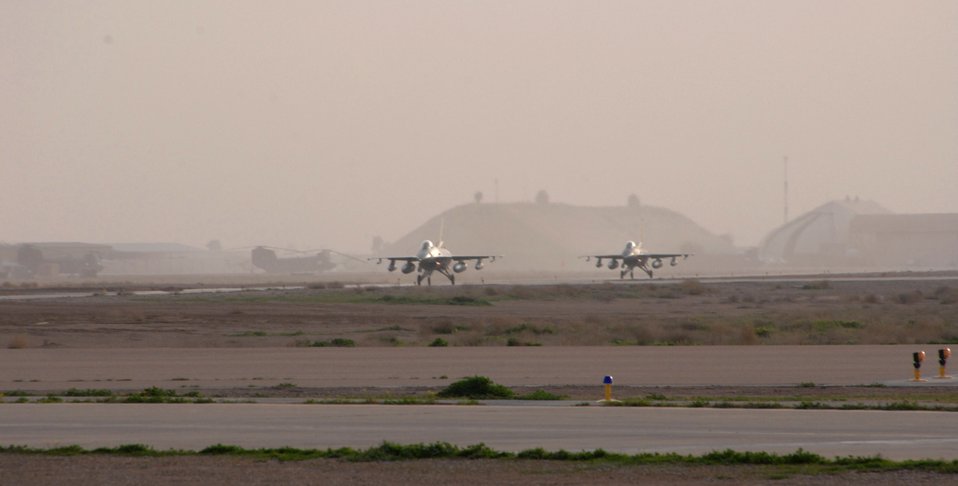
Falcons fly in for the fight

Two F-16 Fighting Falcons assigned to the 332nd Expeditionary Fighter Squadron arrive Feb. 26 at Balad Air Base, Iraq. The F-16s are deployed from the Minnesota Air National Guard's 148th Fighter Wing along with roughly 400 guardsmen in support of Operation Iraqi Freedom.